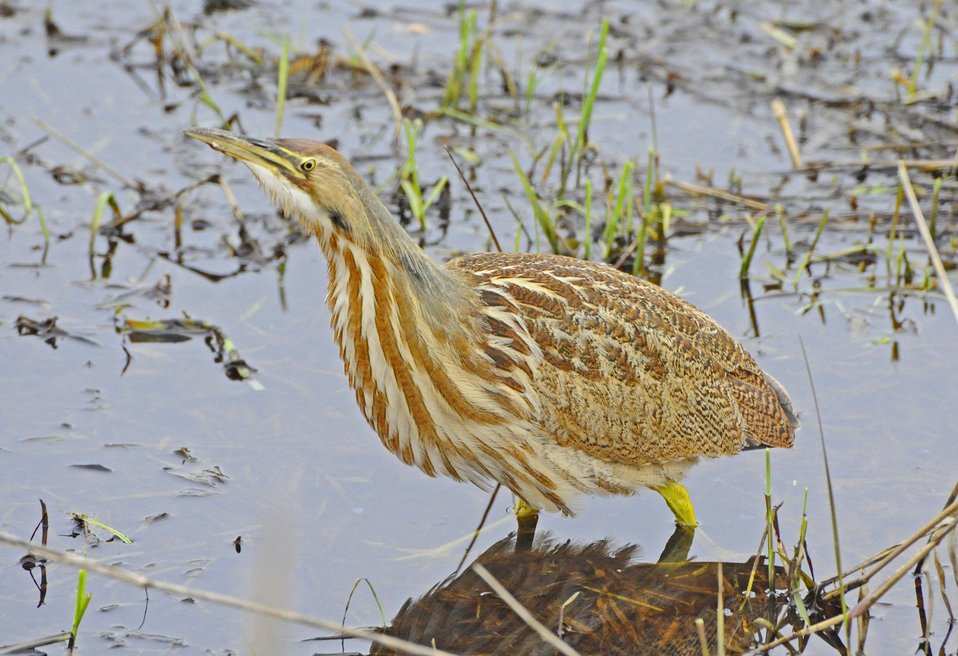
American Bittern (Botaurus lentiginosus)

Credit: Sallie Gentry/USFWS

Have you ever seen one of these majestic birds in the wild? This heron-like wading bird is often difficult to see because of its amazing camouflaged coloring. It is a very secretive species that hides easily by crouching low to the ground with it's neck pulled inward. It has a stout body and neck, but with relatively short legs. Weighing about 1.5 lb, this medium sized bird has a wingspan that can reach 42'. Unlike other waterfowl, both the male and the female look alike and the juvenile is very similar to the adult.

The American Bittern is found all across the country but prefers habitats that include freshwater wetlands with tall emergent vegetation where they can hide. Although you may not see them, you would have no problem hearing them as Bitterns have a distinctive booming call that they use to communicate. These eerie calls have earned them many nicknames: stake-driver, thunder-pumper, and mire-drum.

The American Bittern has a remarkable, though rarely seen, courtship display. The male arches his back, shortens his neck, dips his breast forward, and 'booms' at the female. Both birds engage in complicated aerial displays.

If one was to be approached by a human, they prefer to freeze, not flush like other herons. If an observer is nearby, they will often stretch their neck up, bill pointed towards the sky, and sway from side to side as if imitating waving reeds.